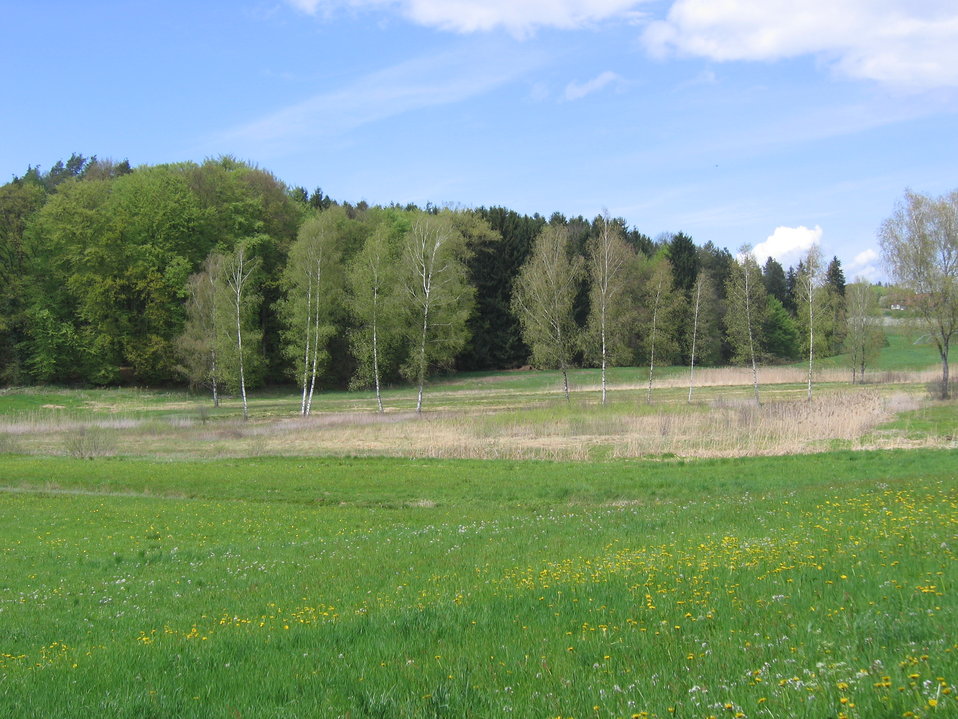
Deutsch: Deutschland - Baden-Württemberg - Bodenseekreis - Kressbronn am Bodensee: Naturschutzgebiet 'Schönmoos'